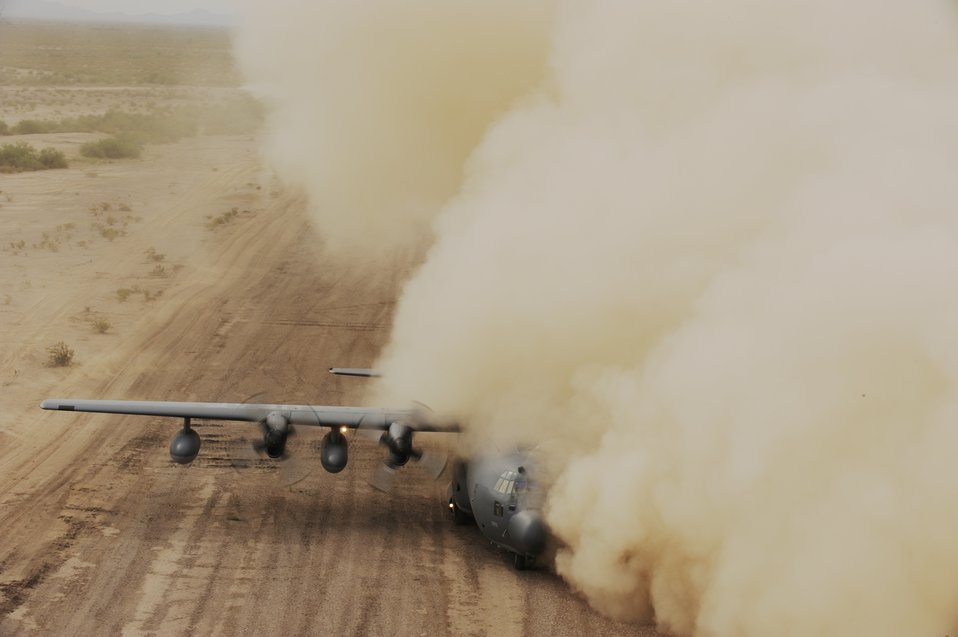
Dust gets in our eyes

An HC-130 King becomes engulfed in a cloud of dust from a helicopter April 16, 2010, near Davis-Monthan Air Force Base, Ariz., during Angel Thunder 2010. The HC-130 is assigned to the 39th Rescue Squadron at Patrick AFB, Fla.